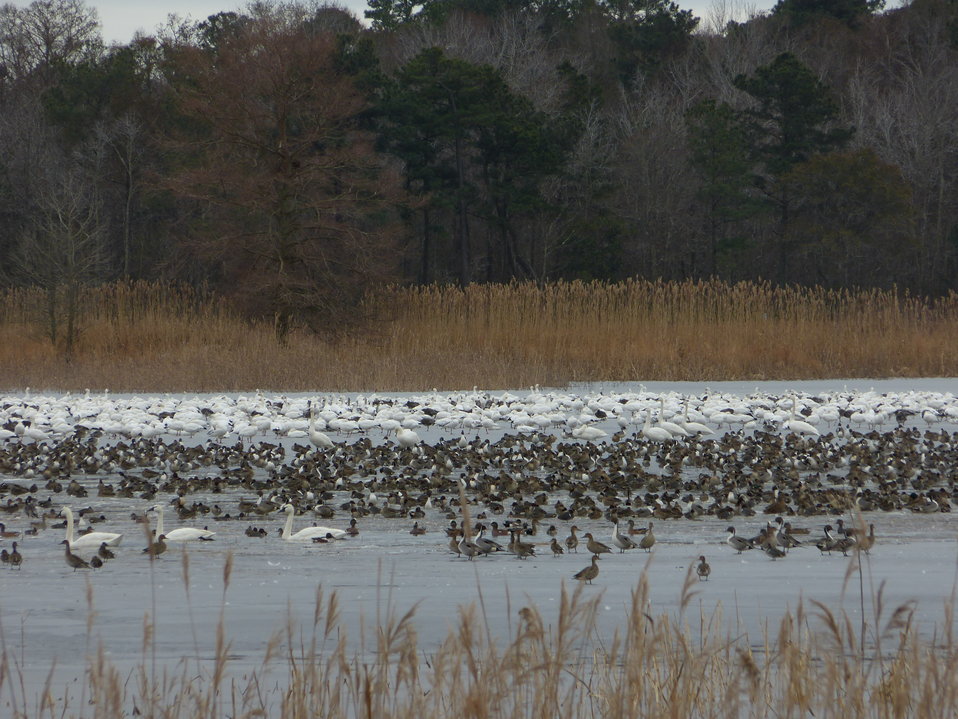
A mixed flock - 5

At Mattamuskeet National Wildlife Refuge in North Carolina. The Refuge’s prime location along the Atlantic Flyway makes it a vitally important stopover for wintering waterfowl.

In total, the Refuge attracts more than 200,000 ducks, geese and swans from November through February.